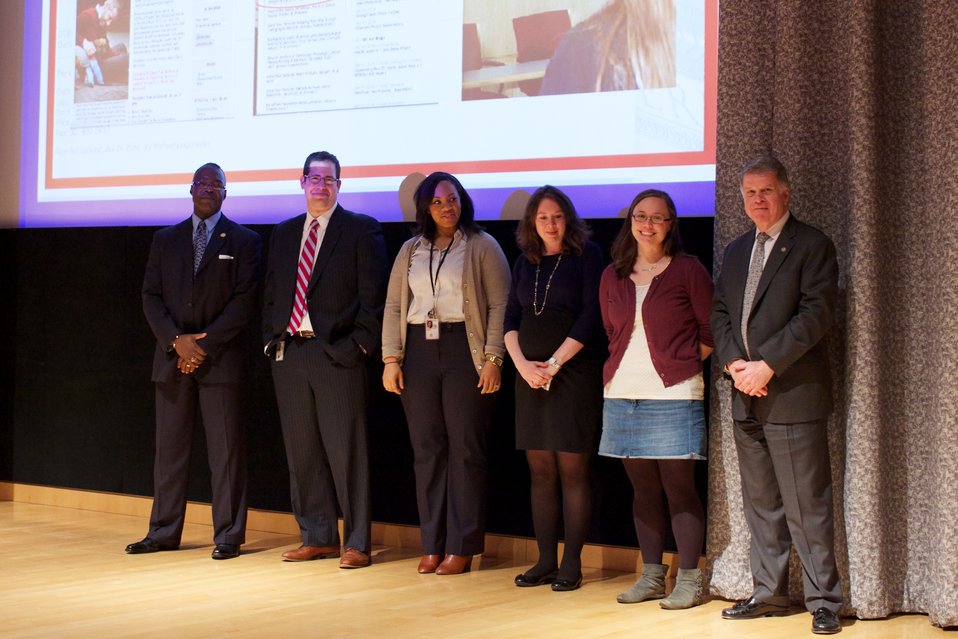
CFC Recognition Event